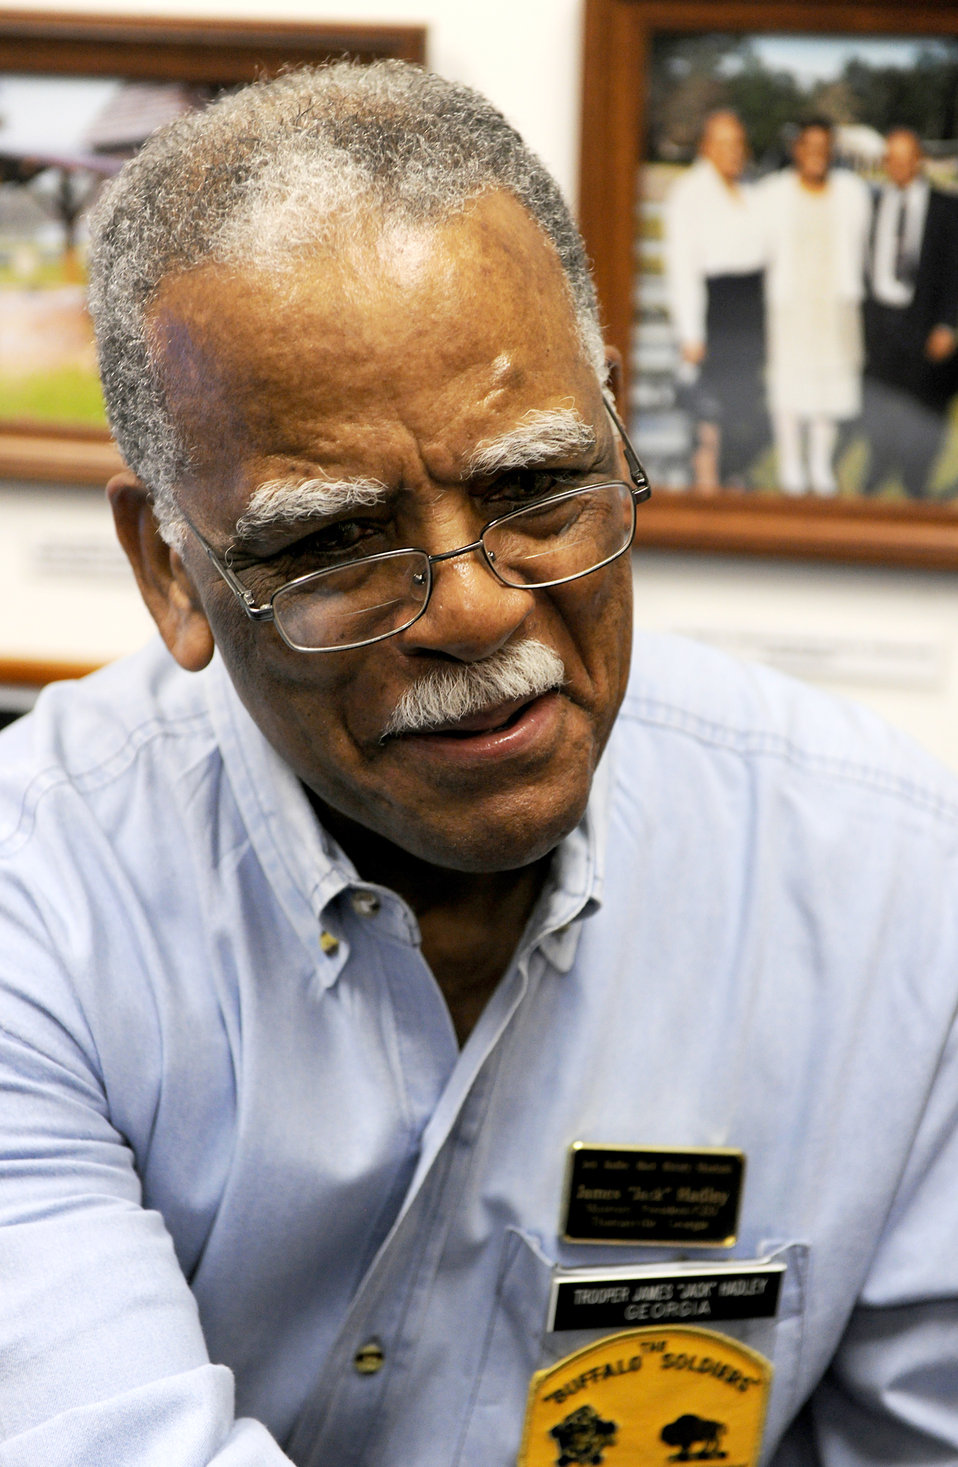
Chief preserves black history

Retired Chief Master Sgt. James